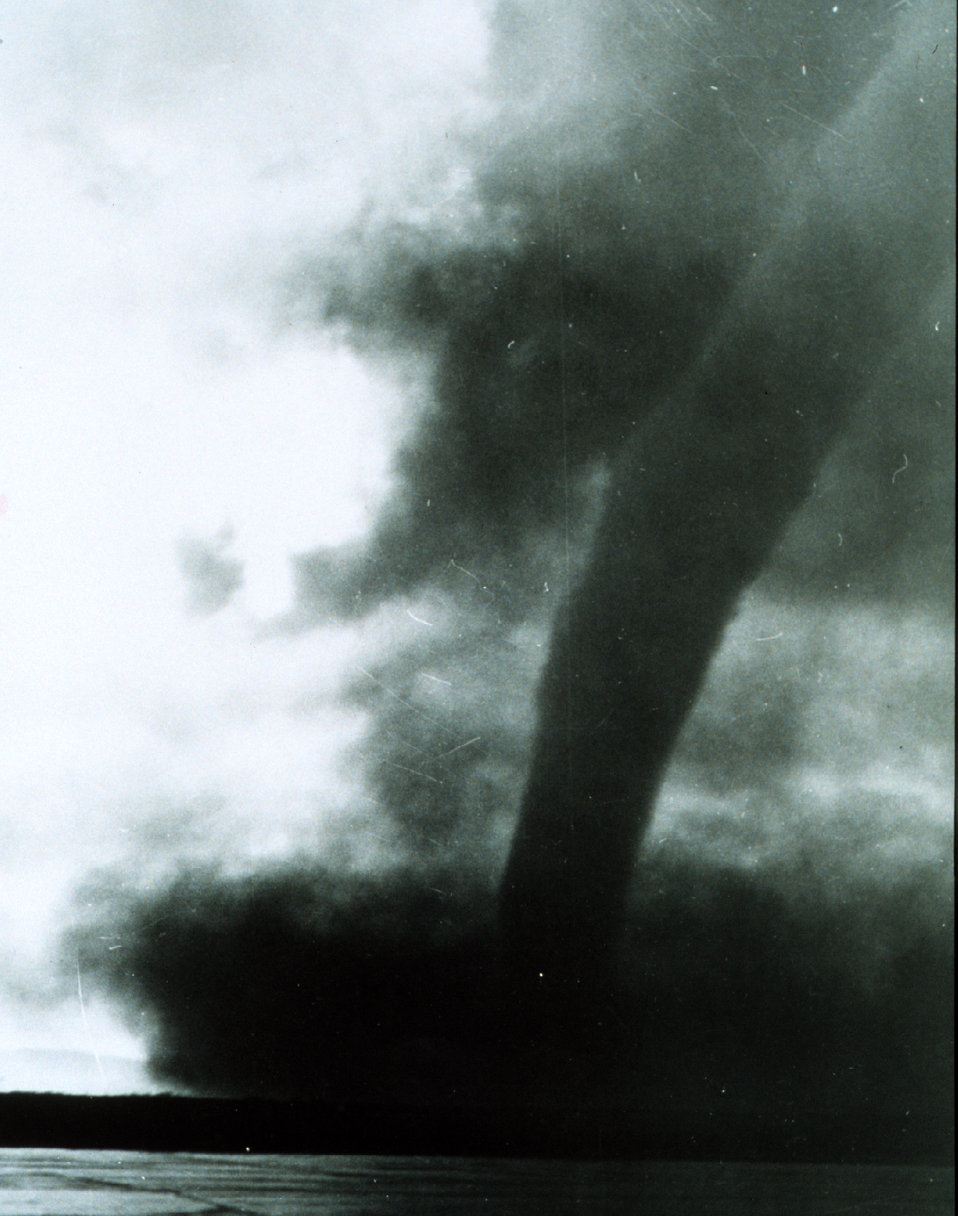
A massive tornado